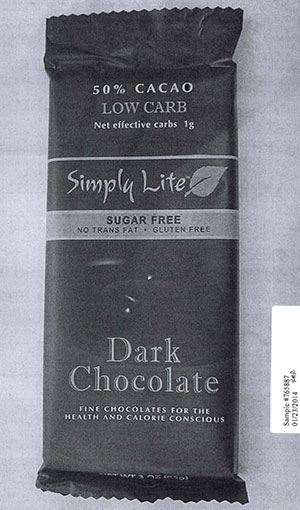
RECALLED – Dark Chocolate Bar

March 17, 2014 – Product Recall – Simply Natural Foods, LLC Issues Allergy Alert for High Levels of Milk Protein in Simply Lite Dark Chocolate Bars.